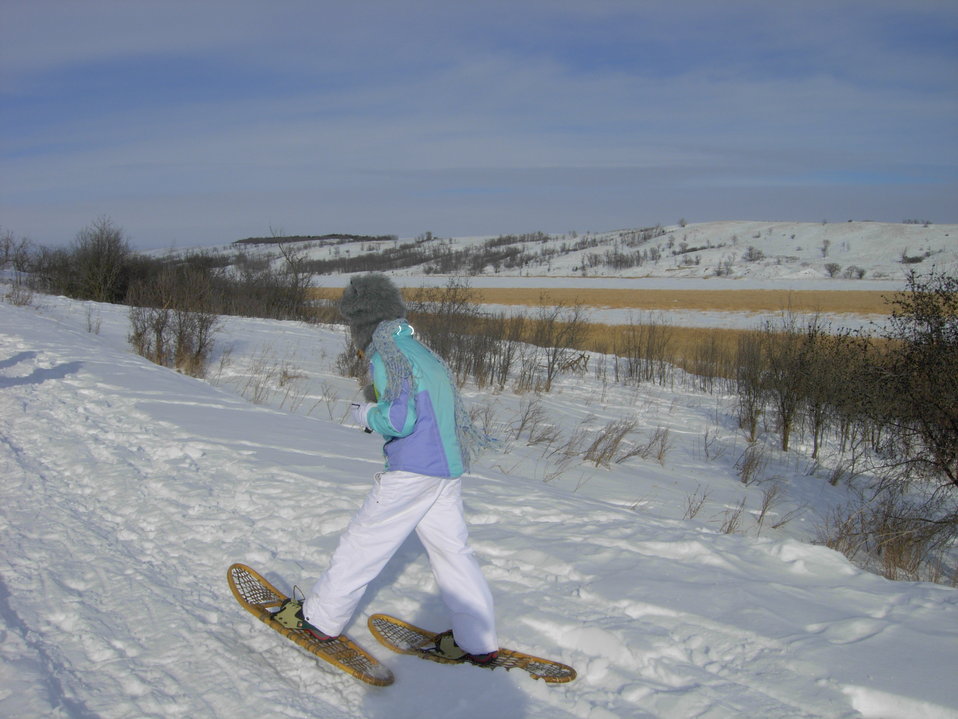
Let's Go Snowshoeing! Jan 29, 2011

Snowshoeing like a pro!